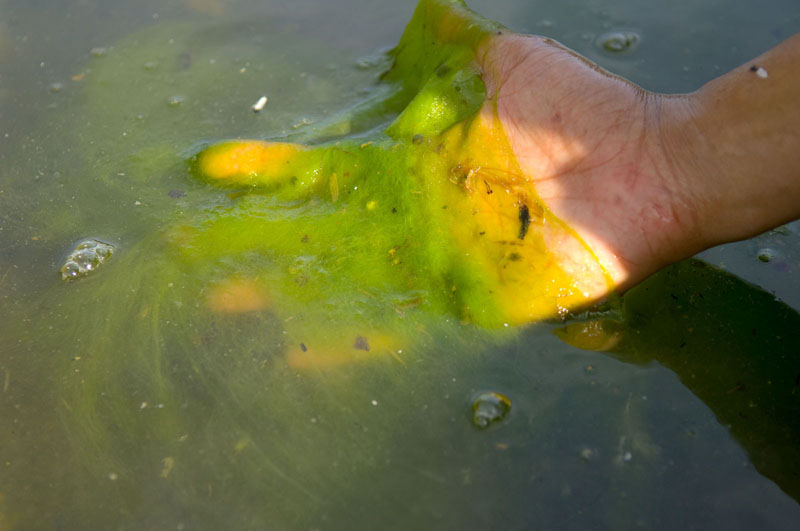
Algae bloom in Reflecting Pool, Washington, DC. 2007 Potomac River, Chesapeake Bay watershed.